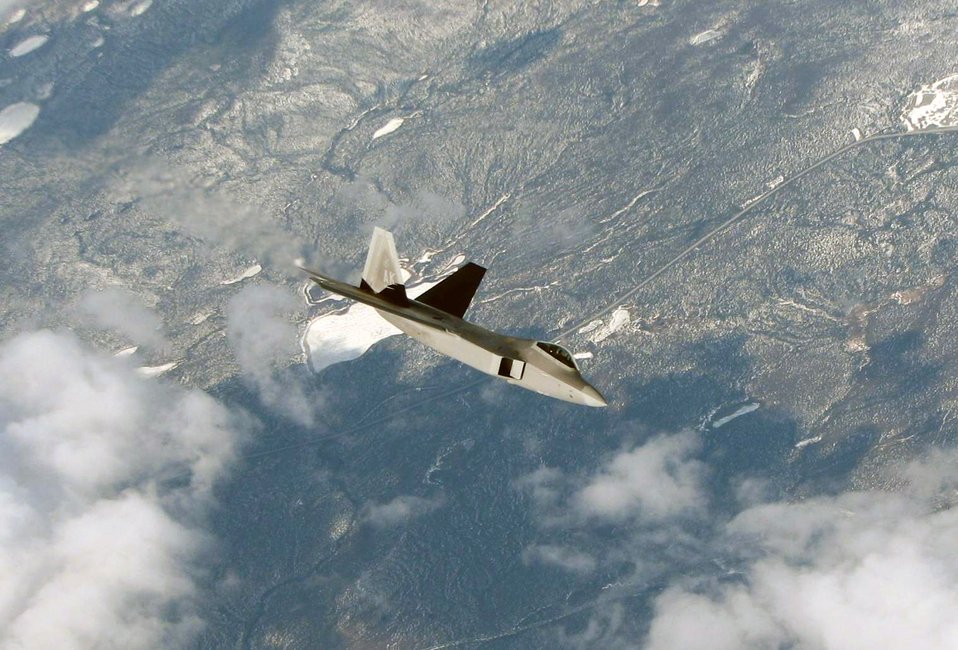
Alaska ANG KC-135s provide edge anytime, anywhere

An F-22 Raptor from the 3rd Wing at Elmendorf Air Force Base, Alaska, rejoins the fight after refueling during Northern Edge 2008 May 8. Twelve Elmendorf AFB F-22s were part of the more than 120 aircraft participating in the largest military training exercise in Alaska. An Alaska Air National Guard KC-135 Stratotanker from Eielson Air Force Base, Alaska's, 168th Air Refueling Wing delivered the fuel during the refueling mission.